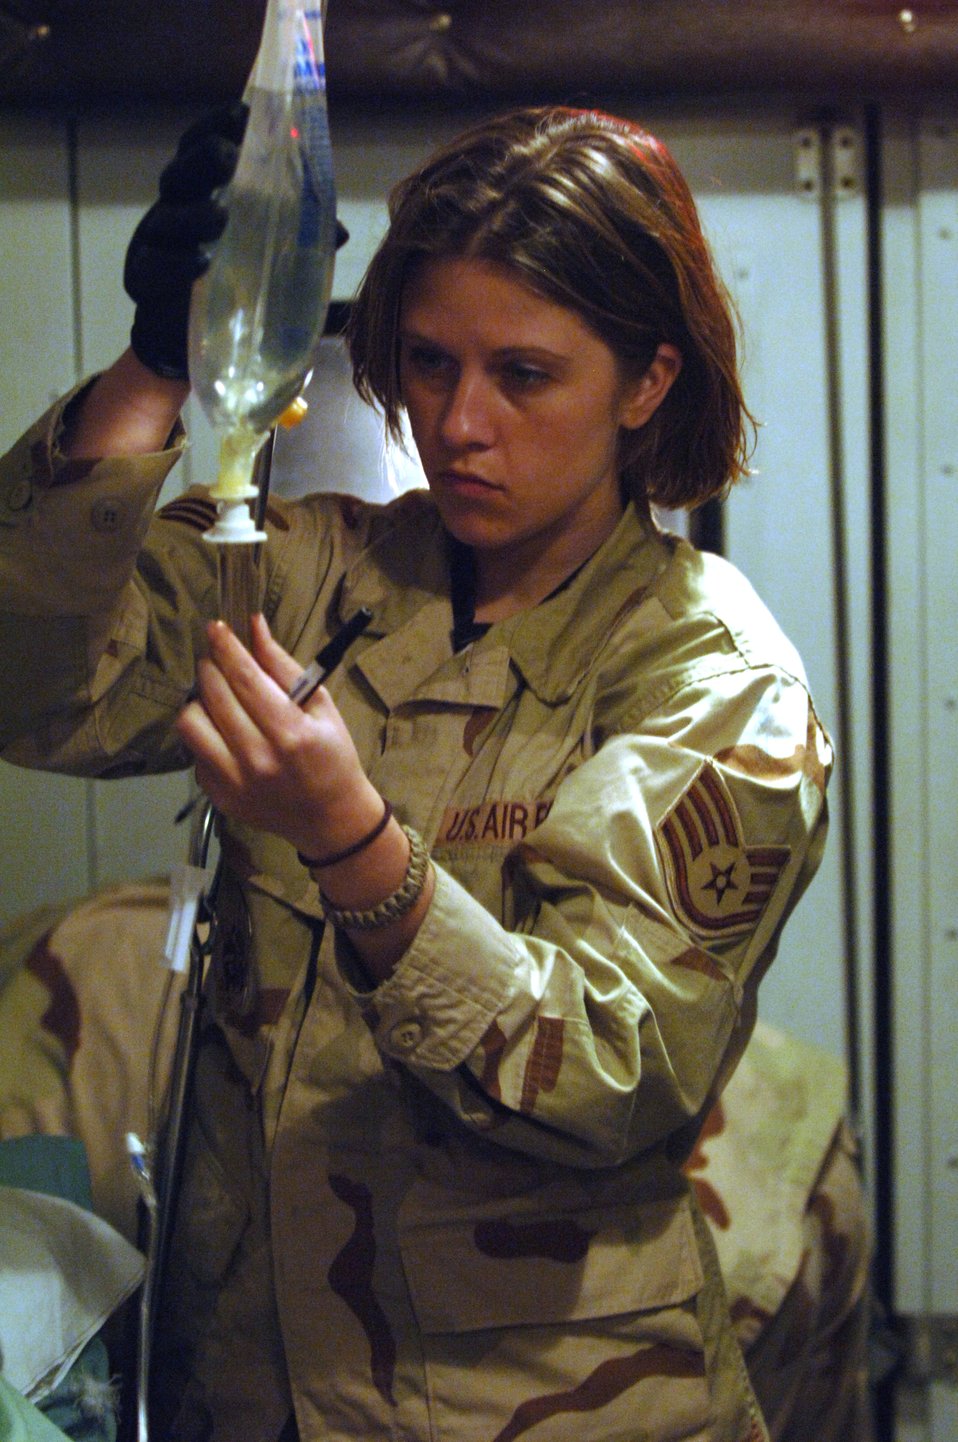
Staging facility prepares injured warfighters for flight

Staff Sgt. Katie Hagemeier checks the intervenes fluids for a patient on a medical transport bus Feb. 21 at Balad Air Base, Iraq, bound for Landstuhl, Germany, where patients receive further care for their wounds. Sergeant Hagemeir is assigned to the 332nd Medical Group Contingency Aeromedical Staging Facility.